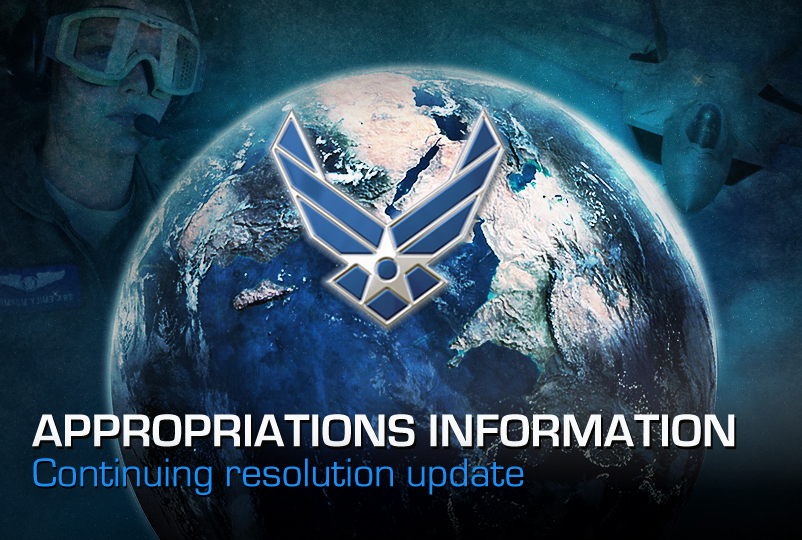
Appropriations information